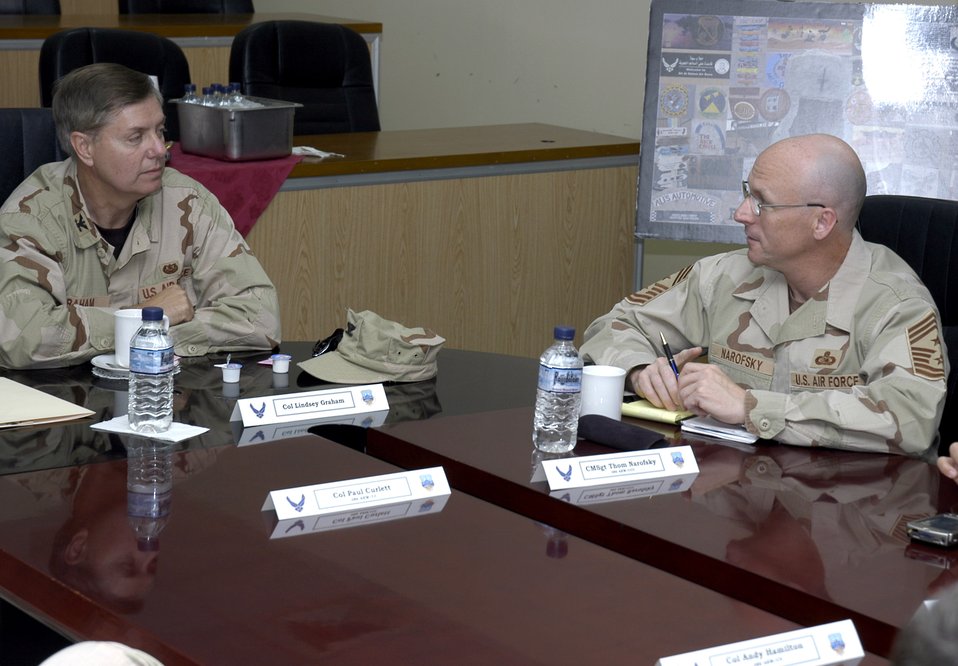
Senator visits Iraq, spends week on active duty

Col. Lindsey Graham chats with Chief Master Sgt. Thomas Narofsky during a briefing in the wing conference room April 9 in Southwest Asia. The senior senator from South Carolina is a Reserve judge advocate. He recently spent two days in Iraq with Sen. John McCain, then another week as a JA with the Multinational Force, Iraq. Chief Narofsky is the 386th Air Expeditionary Wing command chief.